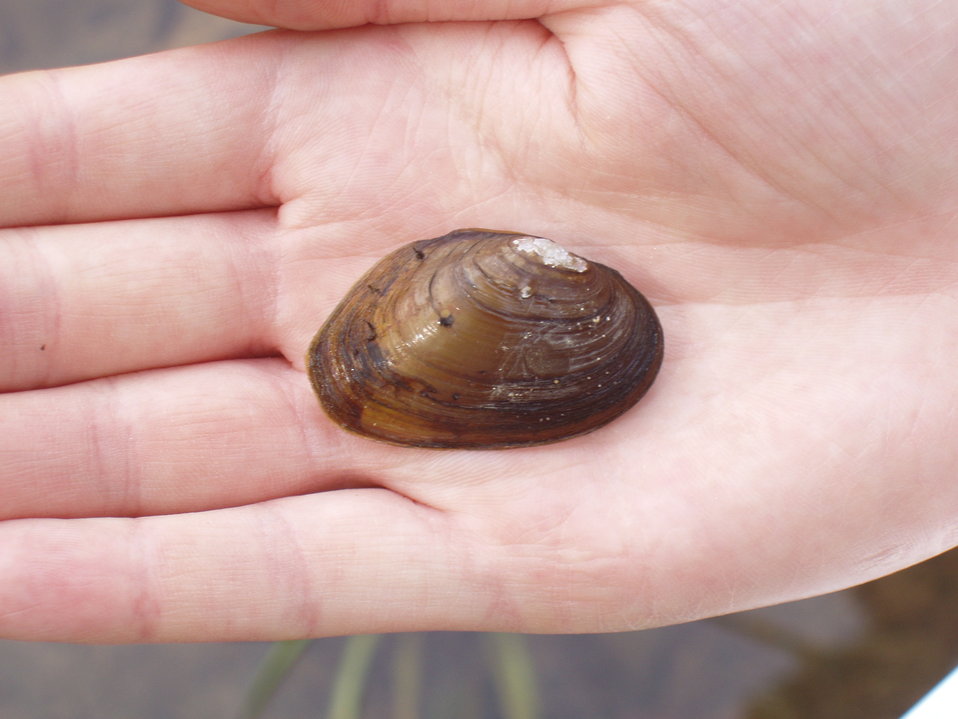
Closeup photo of James spinymussel found during a stream survey in August 22, 2006.